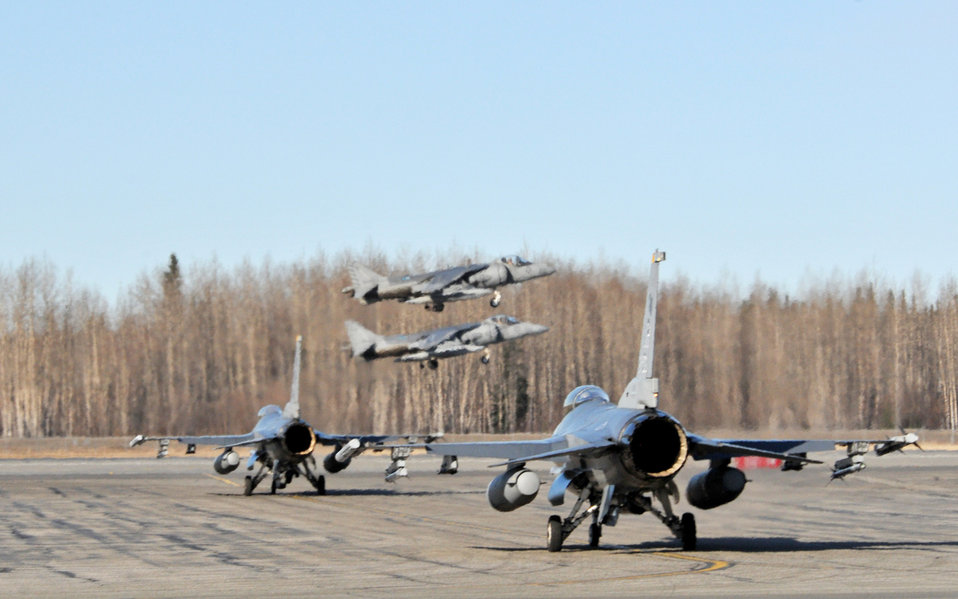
F-16s participate in Red Flag-Alaska

Two Marine AV-8B Harriers take off as two F-16 Fighting Falcons await their turn during Red Flag-Alaska at Eielson Air Force Base, Alaska, April 21, 2010. Harriers are from VMA 211 at Marine Corps Air Station in Yuma, Ariz.